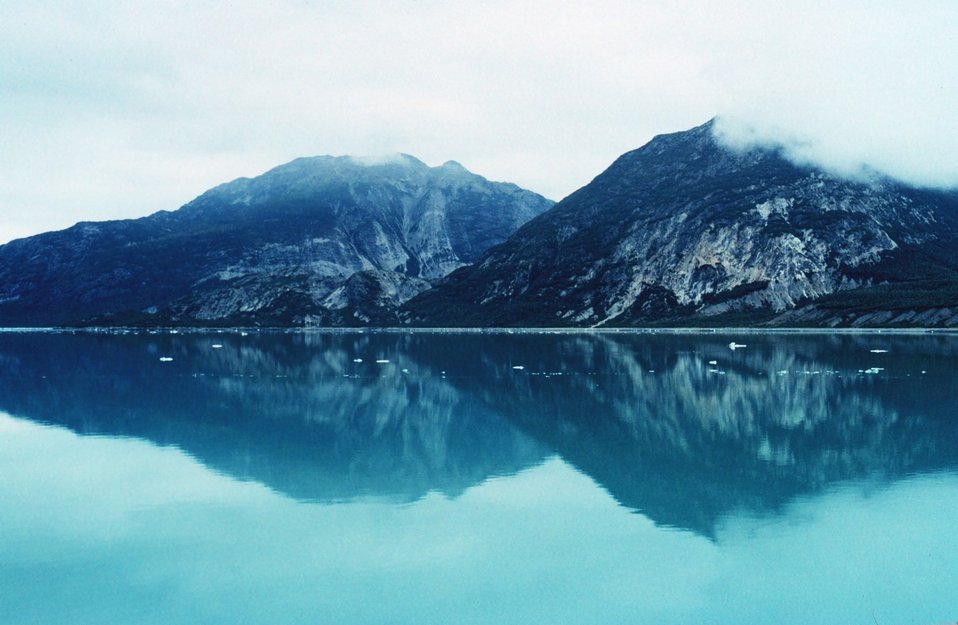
Glacially scoured landscape in Glacier Bay.